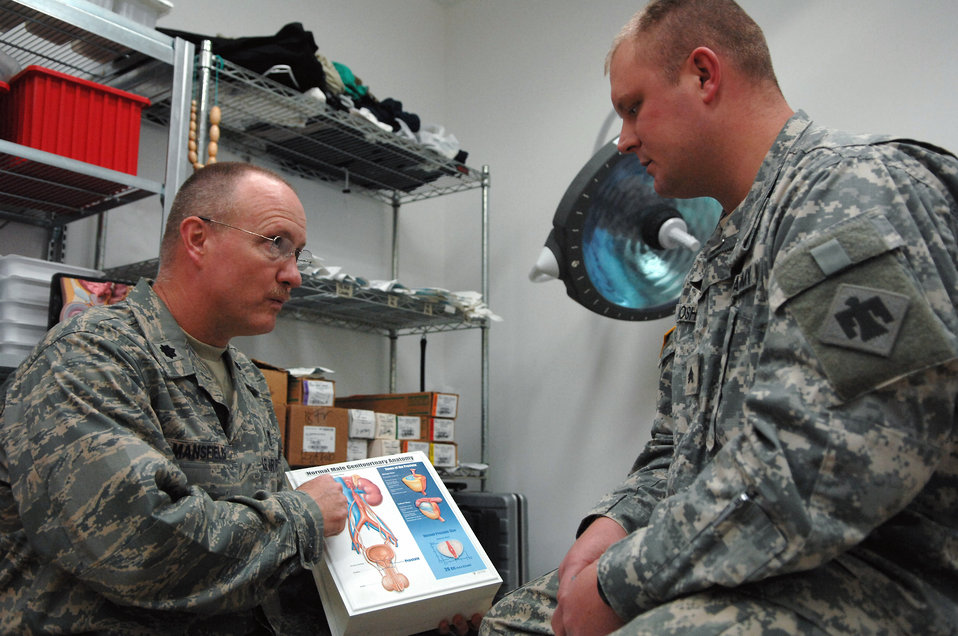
Tiny stones cause boulder-sized pain for deployed servicemembers

Col. (Dr.) John Mansfield discusses kidney stone disease with Army Sgt. Robert Mosher, 345th Support Battalion. Sergeant Mosher had laser surgery treatment at the Air Force Theater Hospital at Balad Air Base, Iraq, to remove a kidney stone. He was away from his unit at Camp Cropper, Iraq, for seven days while he was receiving treatment and recovering. Doctor Mansfield is a 332nd Expeditionary Medical Operations Squadron urologist.